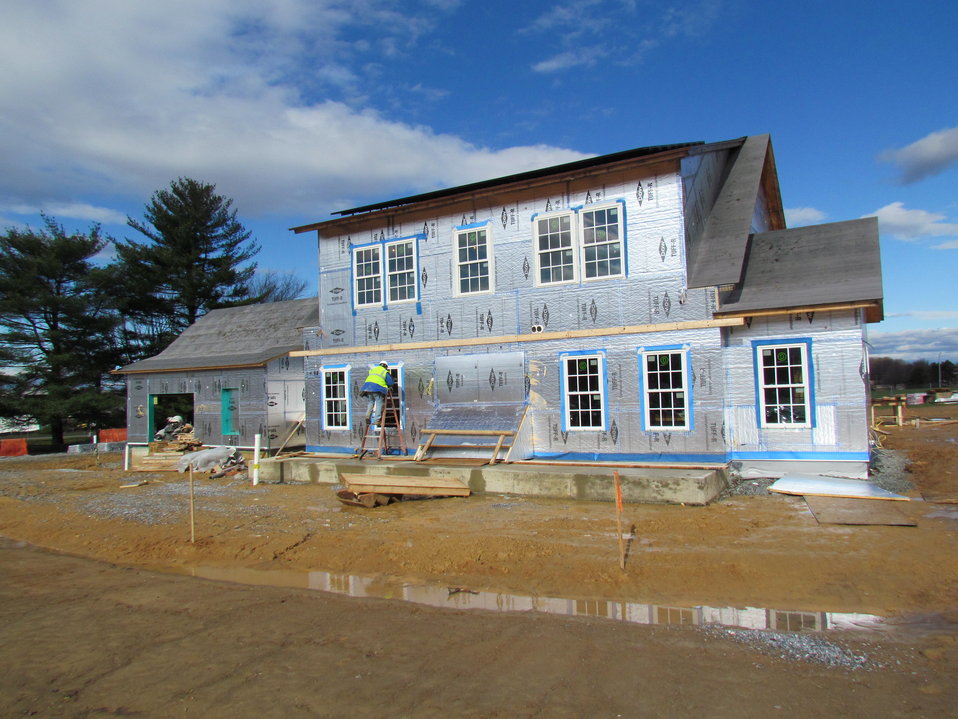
Net-Zero Energy Residential Test Facility – Photo showing the front of NZERTF with front porch header installed and concrete porch floor poured.